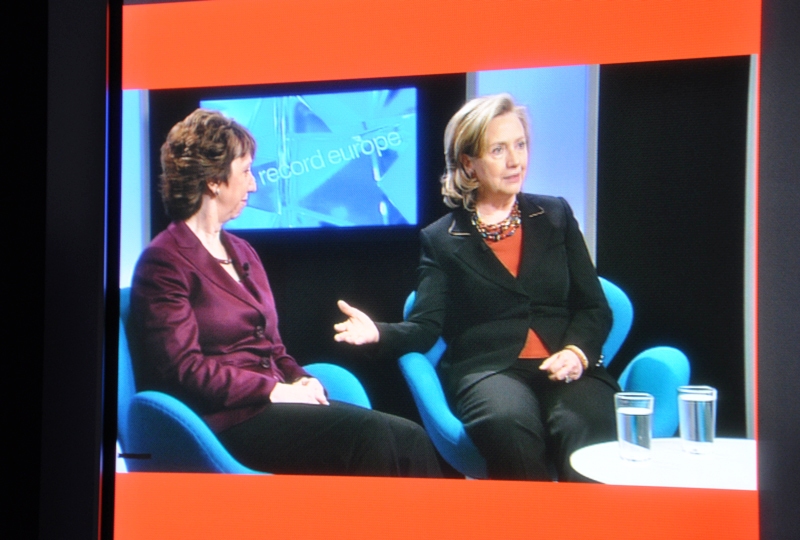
Secretary Clinton and EU High Representative Ashton Participate in a Joint BBC Interview

U.S. Secretary of State Hillary Rodham Clinton and EU High Representative Catherine Ashton participate in a joint BBC interview in Brussels, October 14, 2010.